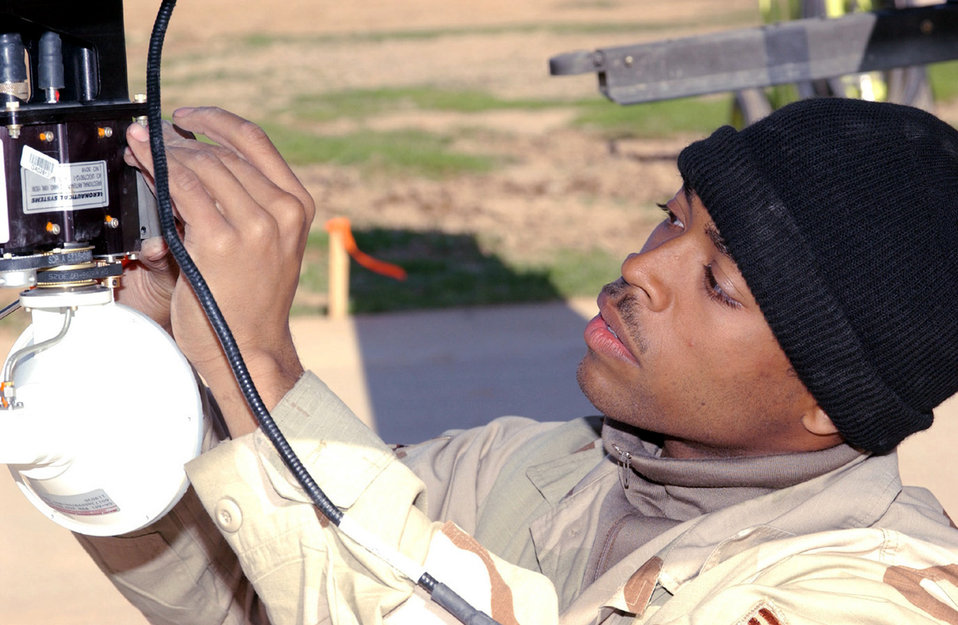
Predator

BALAD AIR BASE, Iraq -- Staff Sgt. Jeffery Hicks replaces a directional antenna mounting unit on an RQ-1 Predator Unmanned Aerial Vehicle before it begins a mission supporting Operation Iraqi Freedom. Sergeant Hicks is a crew chief with the 46th Expeditionary Reconnaissance Squadron here.